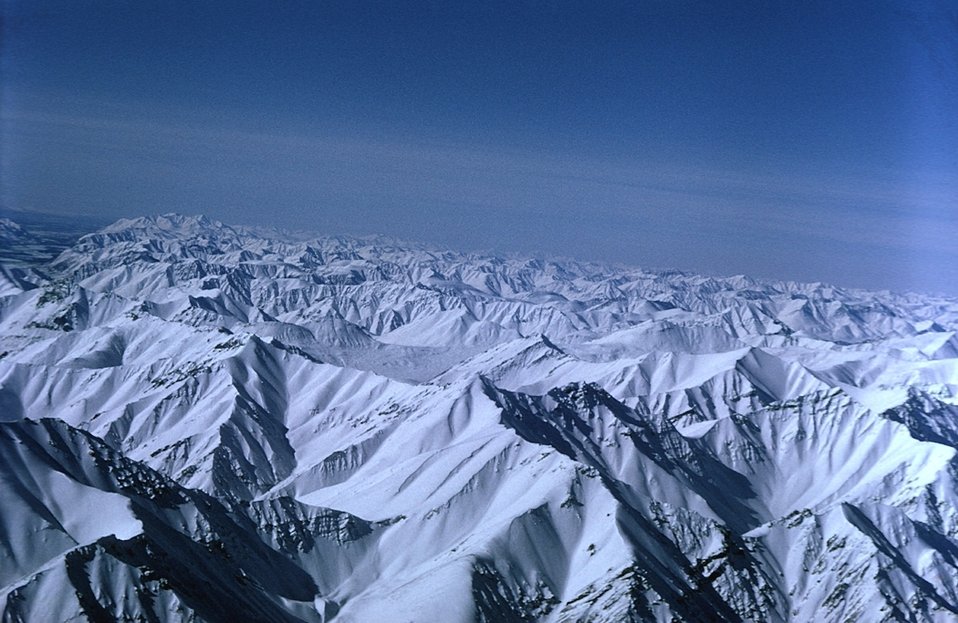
Brooks Range, Arctic NWR

The snow-covered mountain peaks of the Brooks Range in the Arctic National Wildlife Refuge create a daunting view. (USFWS)